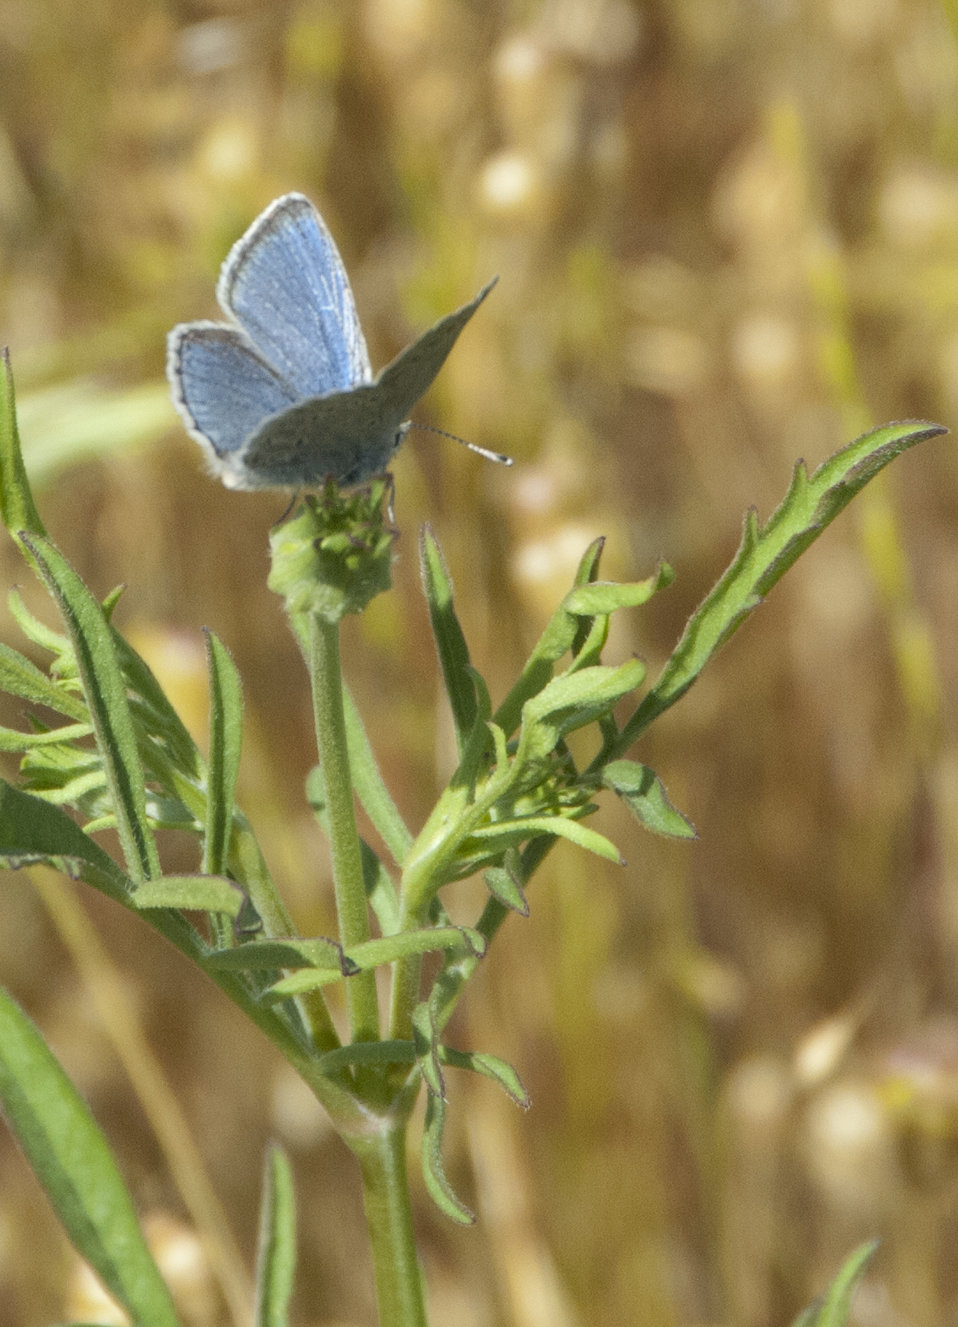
Mission Blue Butterfly-male (3)

photo credit - Sarah Swenty/USFWS
The endangered Mission blue butterfly (Icaricia icarioides missionensis) is a small, delicate butterfly with a wingspan of about 1 to 1.5 inches.